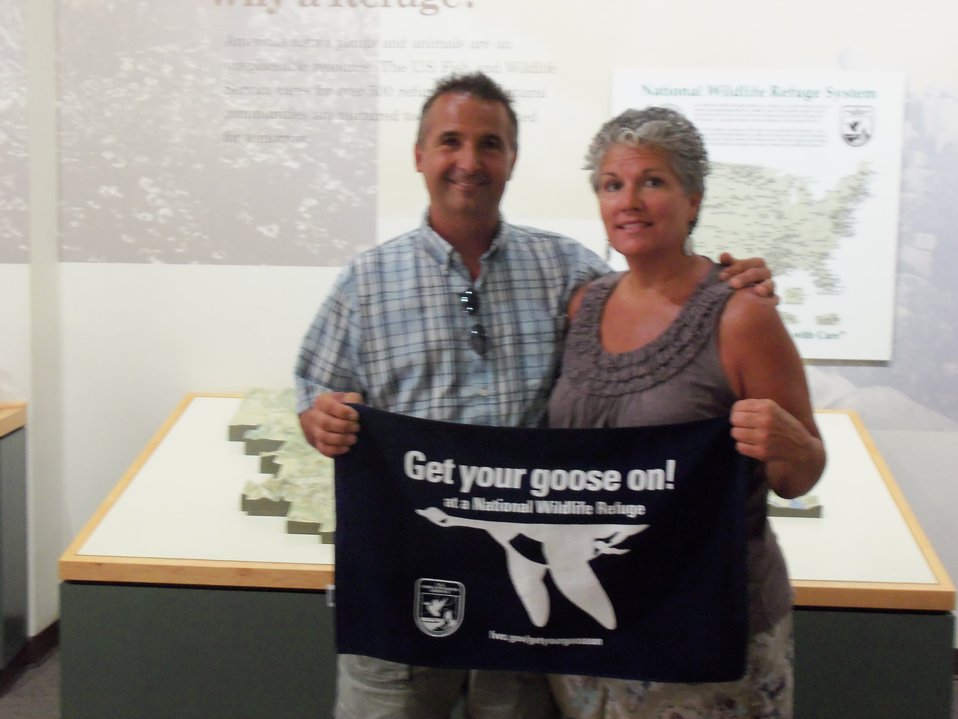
Get Your Goose On!

Wichita Mountains National Wildlife Refuge in Oklahoma.